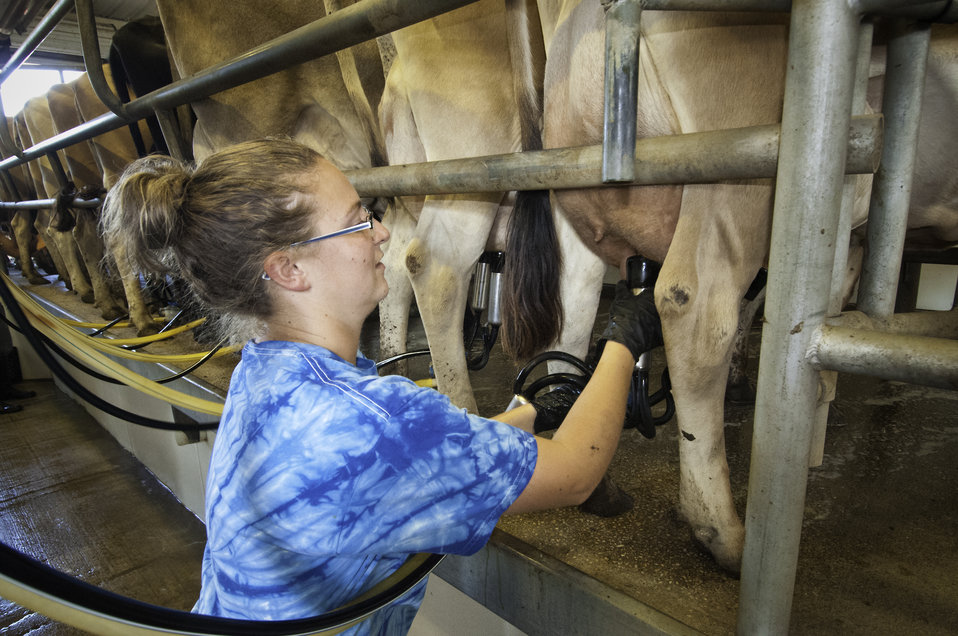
Chapel’s Country Creamery farm manager Courtney Biggs prepares cows to be milked at Chapel’s Country Creamery in Easton, MD. This dairy produces artisan cheeses produced from fresh raw milk produced on the family's Grade A dairy farm. The dairy herd consists of grass fed Jersey and Holstein cows that produce our high quality milk, rich in cream. The milk is all-natural and contains no synthetic hormones, antibiotics, or chemical compounds. The dairy produces its own cheeses from start to finish, which insures the highest quality possible. They use only vegetable rennet and all natural ingredients in their cheese. The Jersey and Holstein cows graze on clover and rye grass on 45 acres of pasture. The cows are rotated among 32 different pastures to insure that the cows are eating the freshest and most nutritious part of the grass thus providing the highest quality of raw milk that is rich in cream. The dairy received the Talbot County, MD Soil Conservation Award for environmental friendly operations for soil, air and water quality concerns.